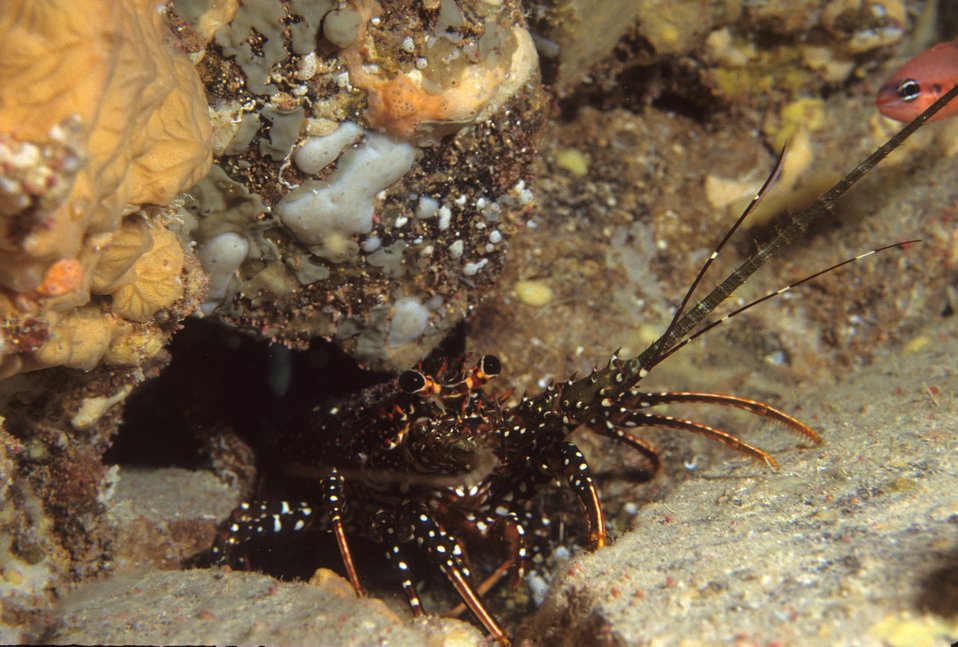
Spiny lobster (Panilurus argus)